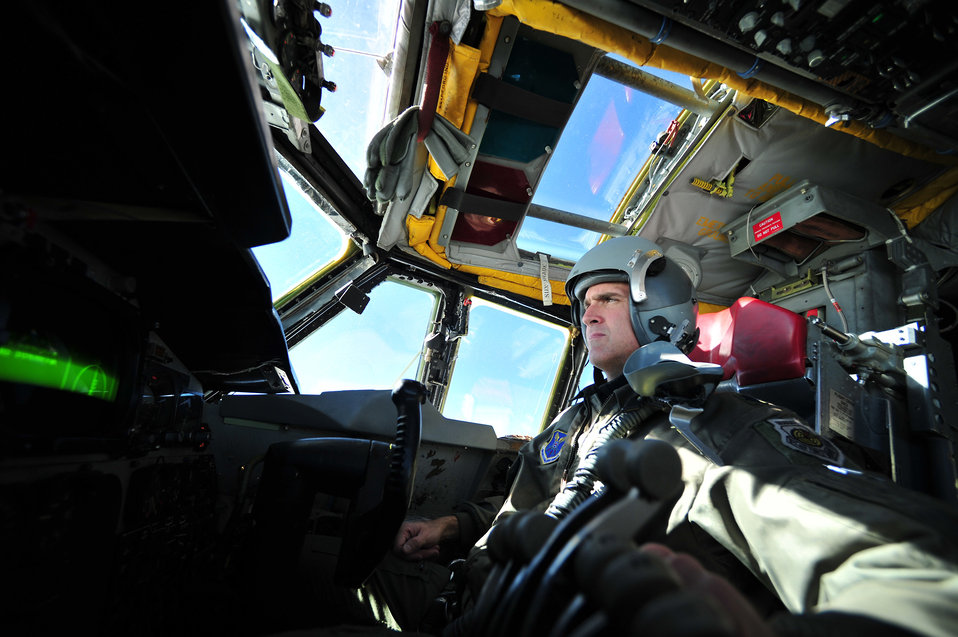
Fit to fly

An aircrew member performs a preflight check aboard a B-52 Stratofortress April 20, 2011, at Minot Air Force Base, N.D., in preparation for an eight-hour sortie to practice bomb-dropping sequences and air refueling.